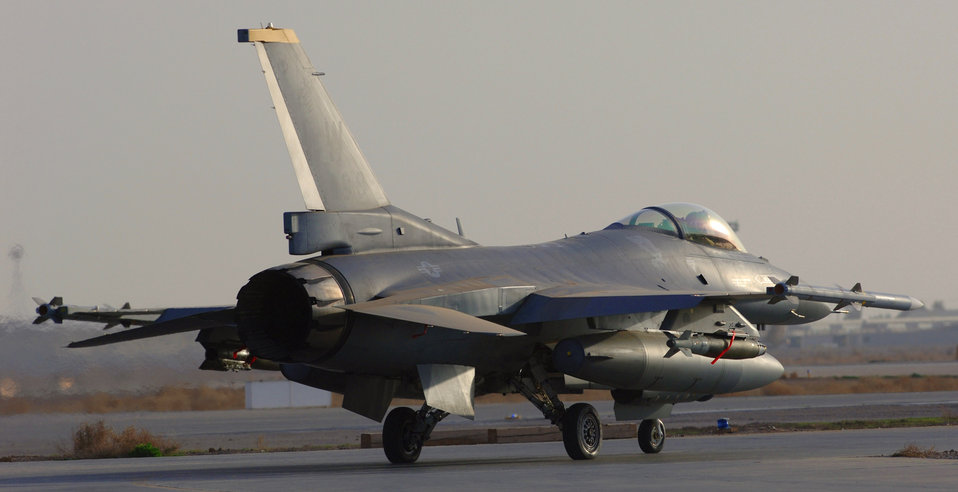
CENTAF Airpower Summary

F-16 Fighting Falcons, like this fighter assigned to the 332 Air Expeditionary Wing at Balad Air Base, Iraq, fly combat missions daily in support of Operation Iraqi Freedom. The F-16, a compact, multi-role fighter, is highly maneuverable and has proven itself in air-to-air combat and air-to-ground surface attack.